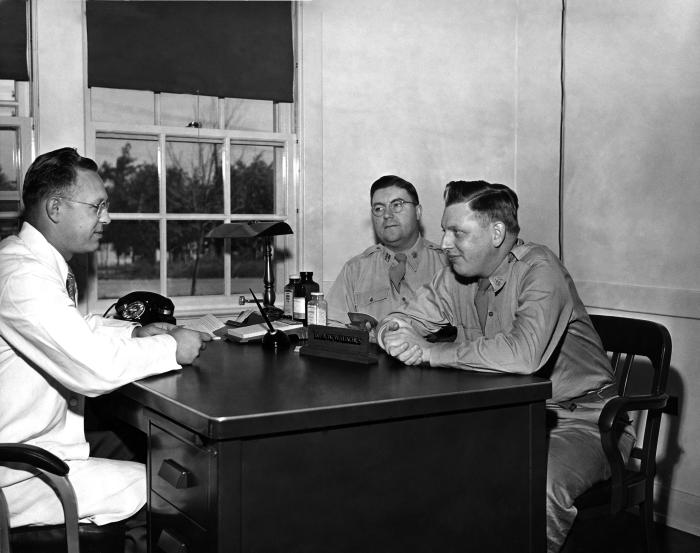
This historical 1943 image, which was provided by the Center for Disease Control's (CDC), National Institute for Occupational Safety and Health (NIOSH), depicted two Public Health Service (PHS) officers that were consulting with a physician who was on the staff of a military ordnance factory during an investigation that was being carried out in order to determine the environmental presence of TNT (trinitrotoluene). Air and dust samples had been acquired inside the plant, whereupon, the results were discussed with the onsite doctor. A poisonous chemical, TNT will irritate the skin upon contact, and actually will change the skin's color to a bright yellow-orange. Prolonged exposure leads to liver damage, anemia, enlargement of the spleen, and a compromised immune system, to name a few of its negative effects. Trinitrotoluene is also a known carcinogen.